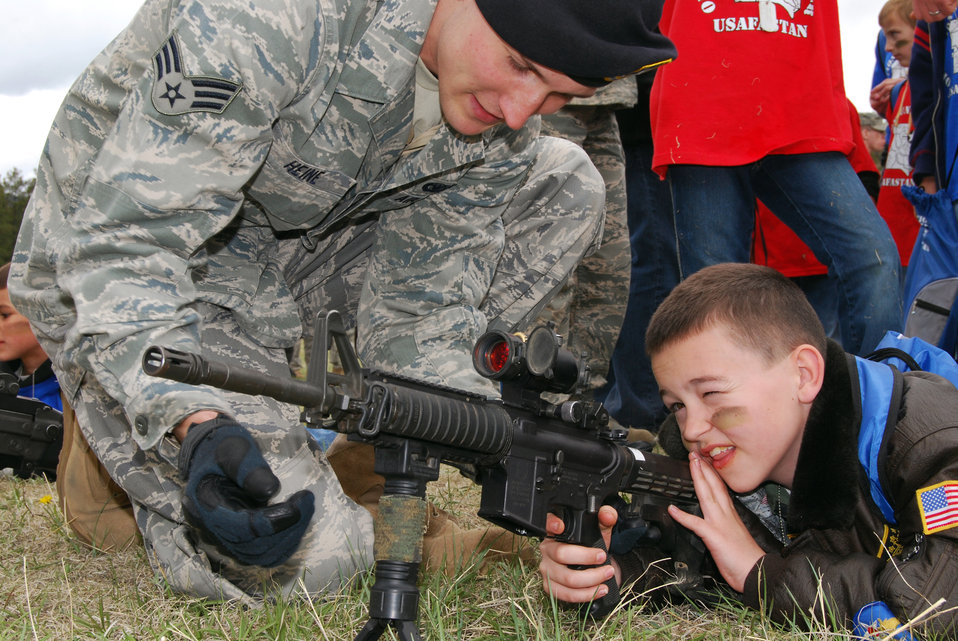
Children 'deploy' to Usafastan

Senior Airman Jacob Heine familiarizes Andy Miller with an M-4 rifle during Operation Junior Deployer May 1, 2010, at the U.S. Air Force Academy in Colorado. Airman Heine is a patroller with the 10th Security Forces Squadron.